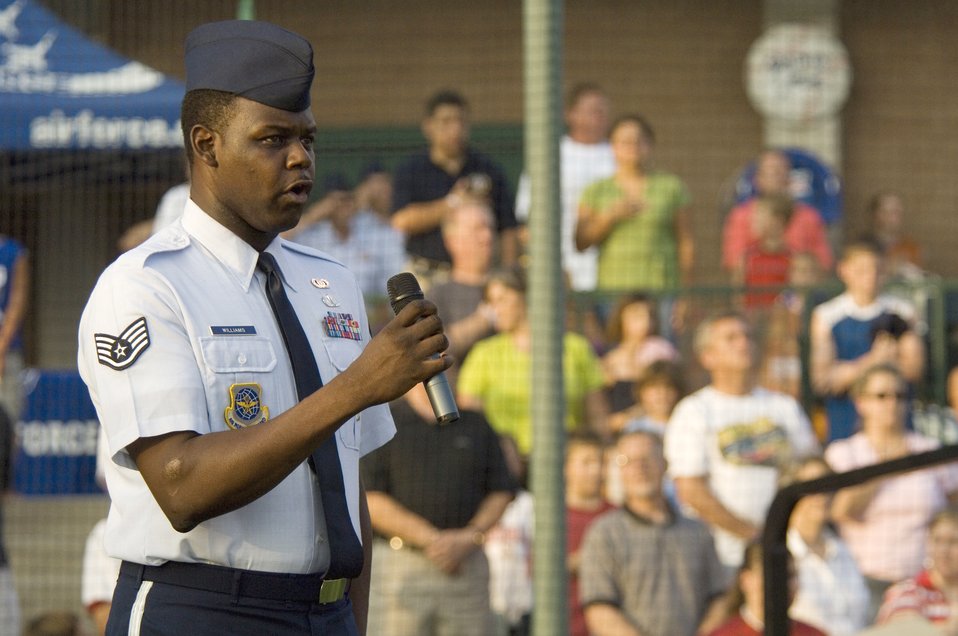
Honoring Airmen

Staff Sgt. Albert Williams sings the national anthem before a Gateway Grizzlies minor league baseball game Aug. 8 in Sauget, Ill. Air Force night at the stadium featured special admissions and promotions for Airmen. The event was one of several activities taking place in the greater St. Louis area celebrating Air Force Week. Sergeant Williams is a member of the Air Force Band of Mid-America at Scott Air Force Base, Ill.